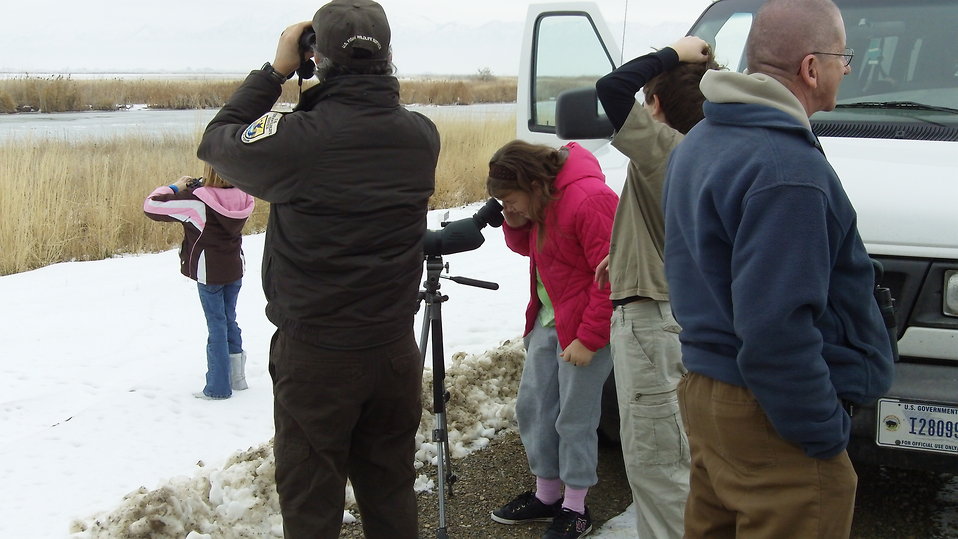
Bird Counting

Young volunteer, Alison, and other young scientists get a closer look at a Bald Eagle during CBC4Kids(Christmas Bird Count for Kids) in December 2010.